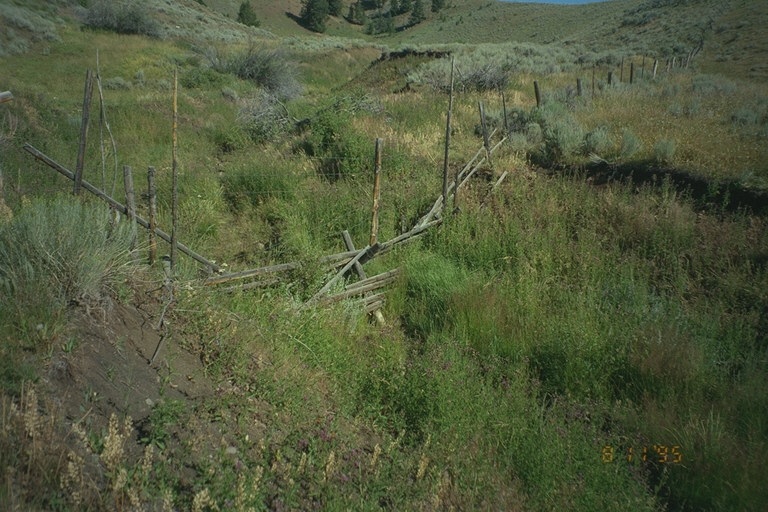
Riparian area Public Lands Salmon Field Office UCSC Upper Columbia Salmon Clearwater District